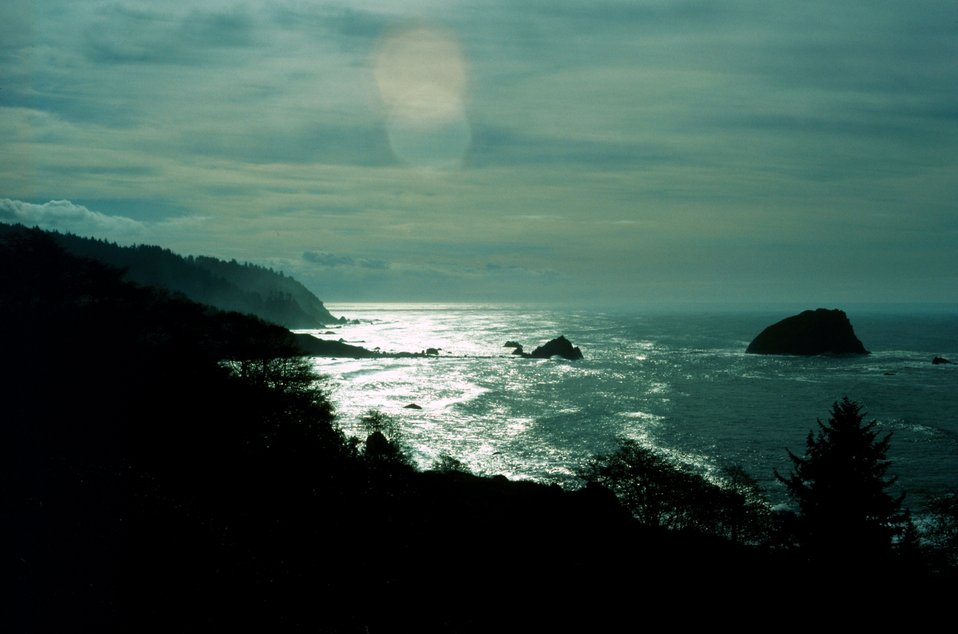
Del Norte County coastline just south of the California-Oregon border.